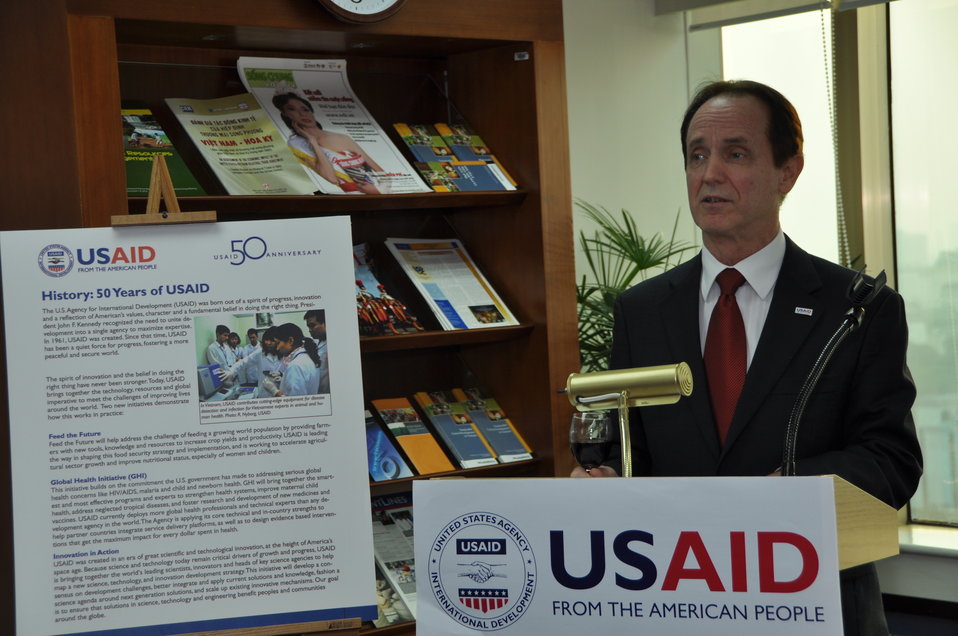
USAID Vietnam Open House, November 3, 2011

USAID/Vietnam Mission Director Francis Donovan.